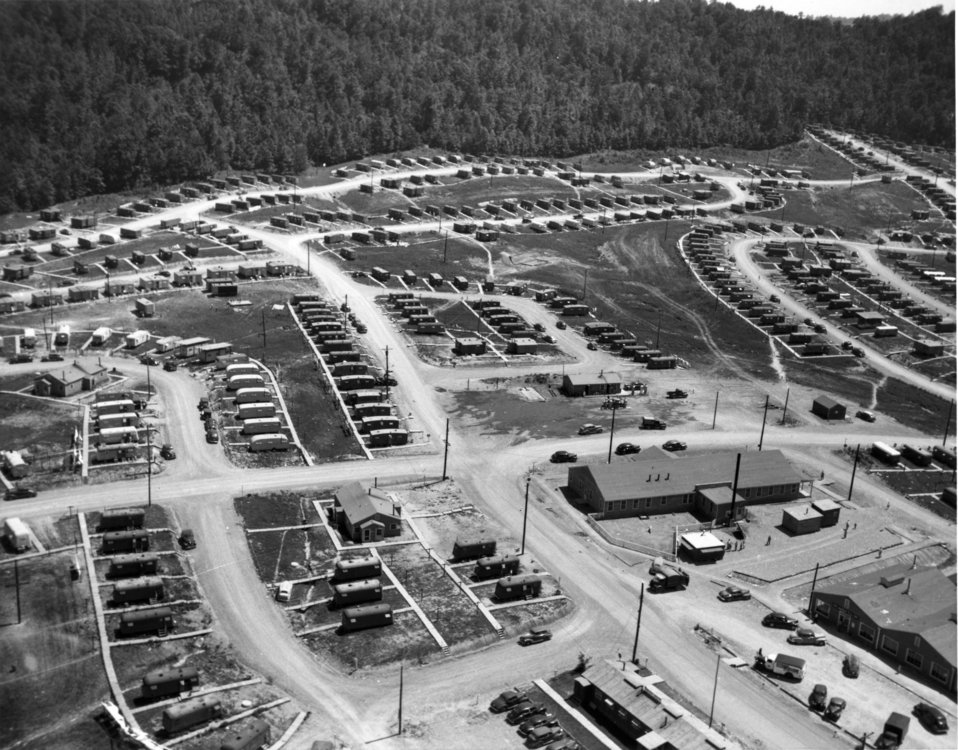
Aerial of Oak Ridge